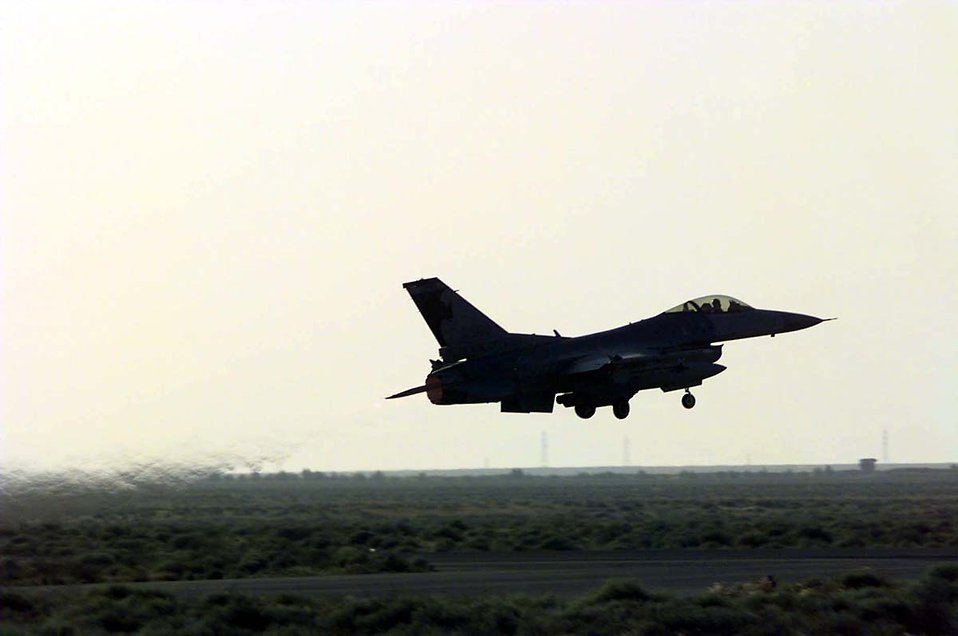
In the air

AHMED AL JABER AIR BASE, Kuwait -- An F-16 Fighting Falcon from the 114th Fighter Wing, Joe Foss Field, Sioux Falls, S.D., takes off from the runway here.